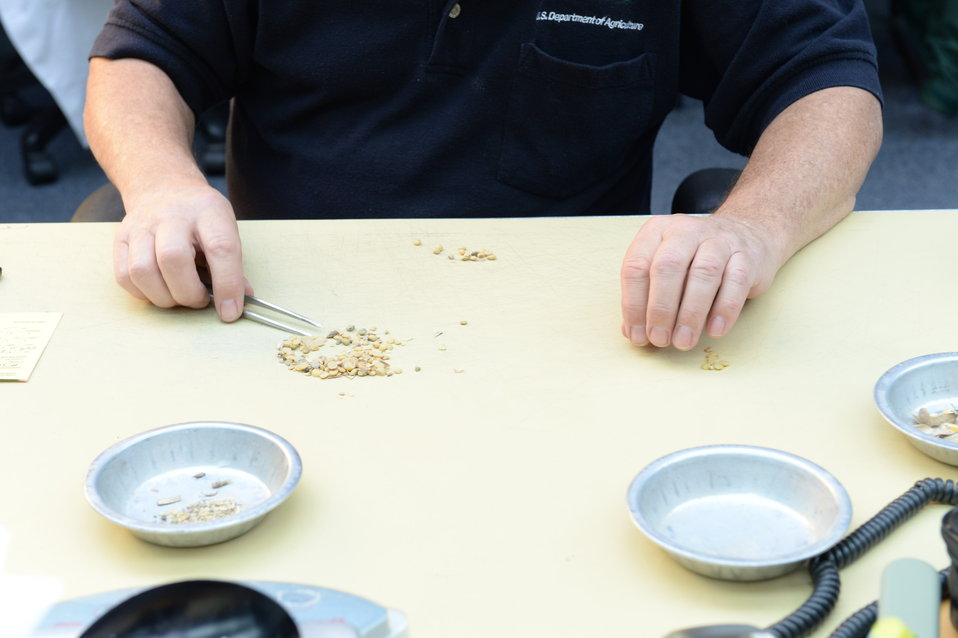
U.S. Department of Agriculture (USDA) Grain Inspection, Packers and Stockyards Administration (GIPSA) Federal Grain Inspection Service (FGIS) employee examines grain samples at the FGIS inspection laboratory in New Orleans, LA on Monday, Nov. 18, 2013.